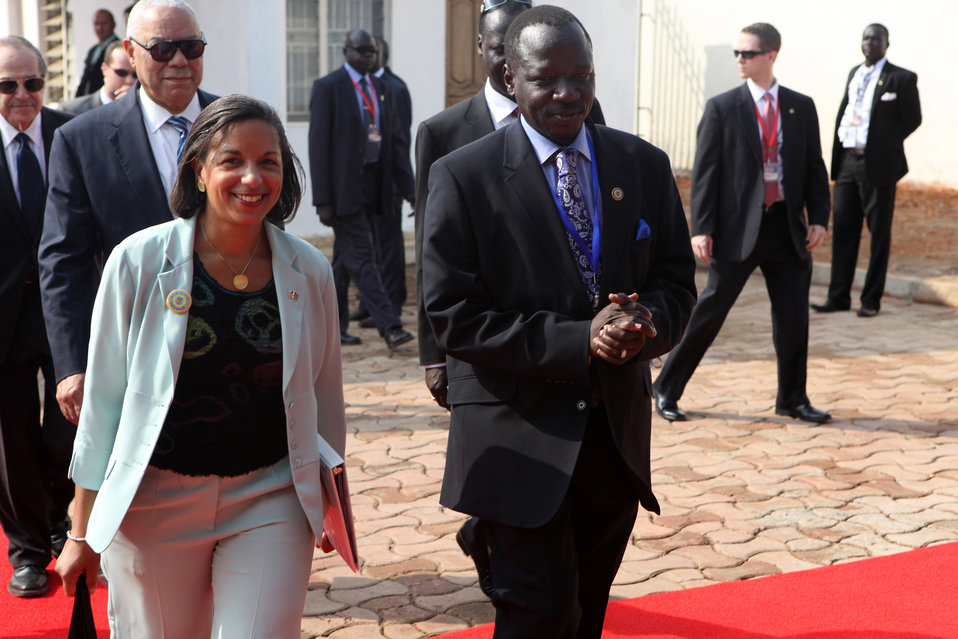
South Sudan Independence Day

Ambassador Susan E. Rice, U.S. Permanent Representative to the United Nations, with Government of South Sudan Minister to the Office of the President Dr. Cirino Hiteng in Juba, South Sudan on July 9, 2011.